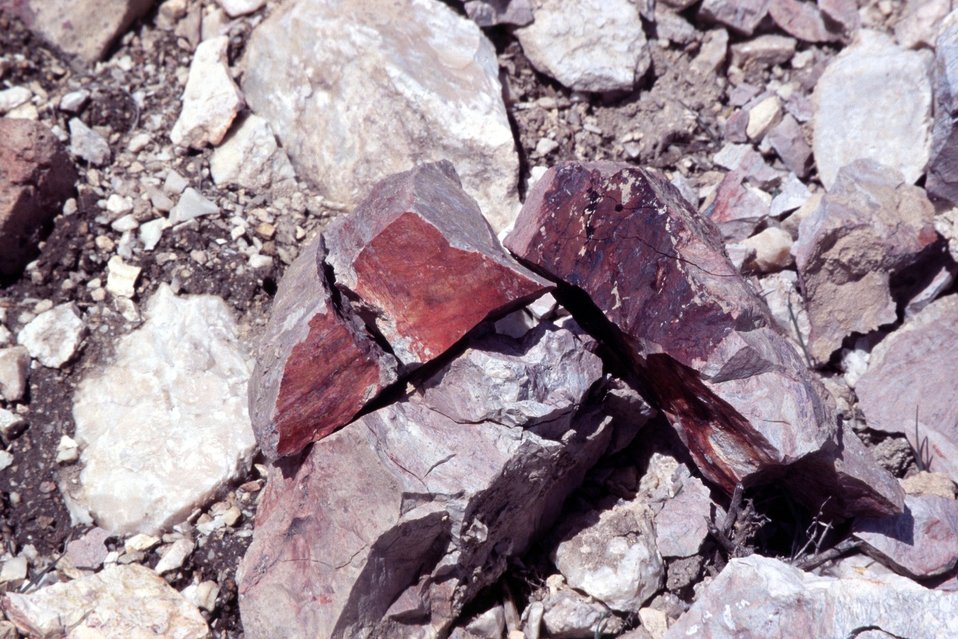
AML Glass Buttes, G3, Burns District. This ore sample was broken open with a hammer to show the red cinnabar (mercury sulfide) ore inside. The ore sample oxidizes readily to purple where it is exposed to air and sunlight.